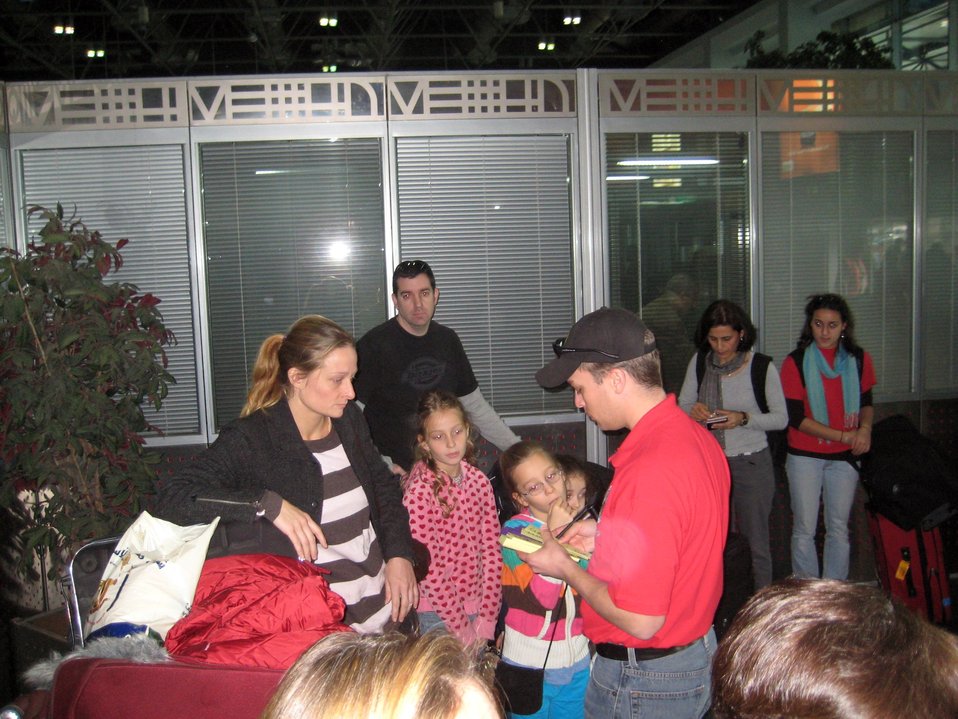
An Embassy Cairo Officer Assists an American Family

An Embassy Cairo Consular Affairs Officer assists an American family with their boarding passes and immigration procedures before they board a U.S. government chartered flight at the Cairo International Airport in Egypt, on February 3, 2011.